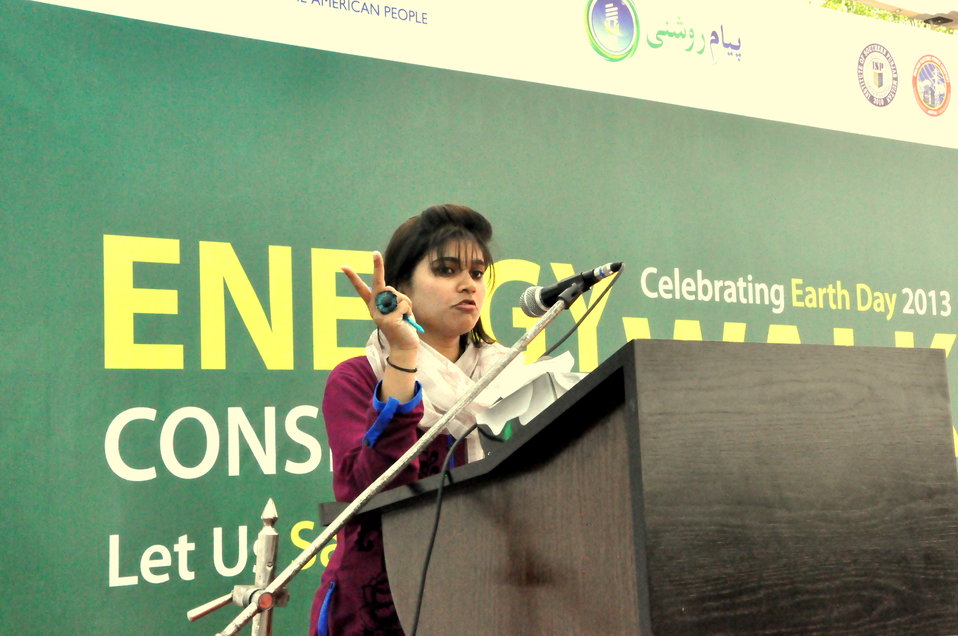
USAID celebrates Earth Day 2013

Students delivers speeches on the importance of energy conservation.